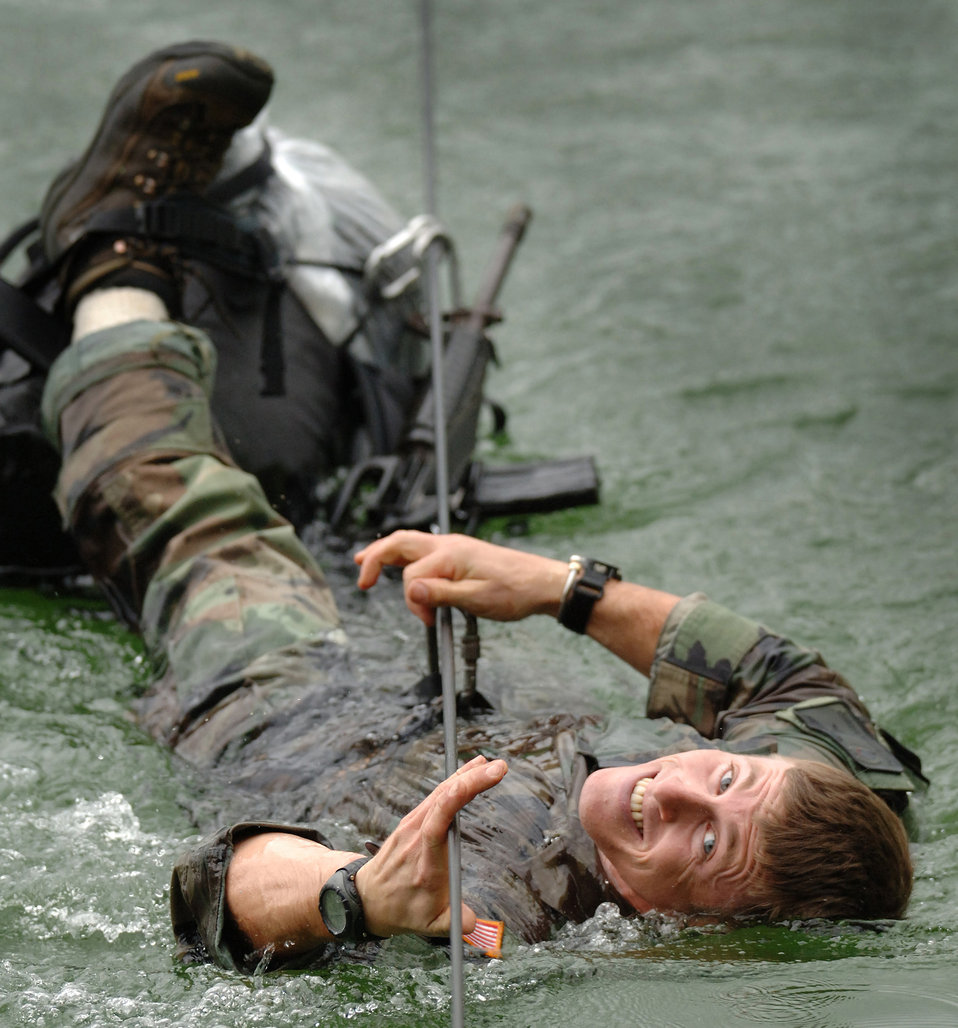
Mountaineer training course

Tech. Sgt. Dana Vaughan pulls himself across a cold Vermont pond on Thursday, June 8, 2006. Sergeant Vaughan is attending a two-week mountaineer training course at the Vermont National Guard Army Mountain Warfare School in Jericho, Vt. He is a pararescueman from Nellis Air Force, Base, Nev.